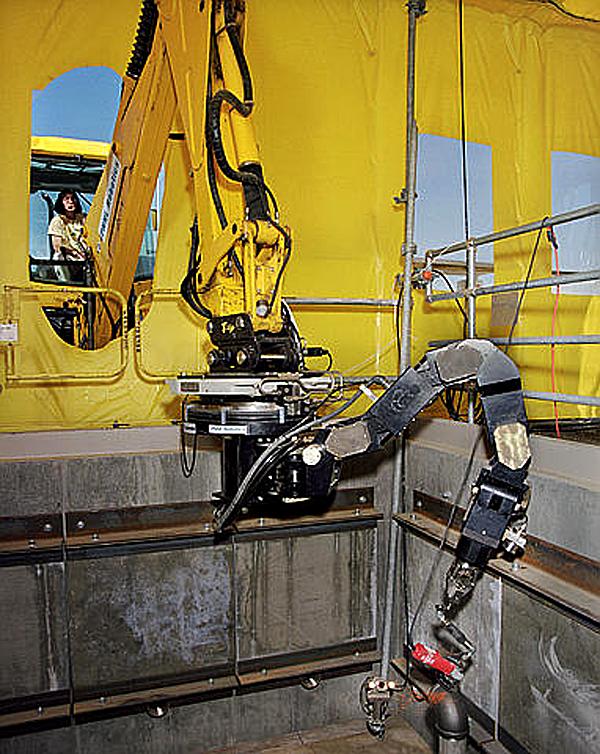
PACIFIC NORTHWEST NATIONAL LABORATORY'S PIT VIPER ROBOTIC ARM SYSTEM MOUNTED ON THE END OF A BACKHOE.

PACIFIC NORTHWEST NATIONAL LABORATORY'S 'PIT VIPER' ROBOTIC ARM SYSTEM, TESTED AT HAMMER'S WASTE TANK PROP, WILL ALLOW WORKERS TO REHABILITATE CONTAMINATED WASTE TANK PITS FROM THE SAFETY OF A NEARBY CONTROL TRAILER. THE HAZARDOUS MATERIALS MANAGEMENT AND EMERGENCY RESPONSE CENTER (HAMMER), IS A TRAINING FACILITY LOCATED IN RICHLAND, WASHINGTON. HAMMER AREAS OF EXPERTISE INCLUDE EMERGENCY OPERATIONS, ENVIRONMENTAL AND WASTE MANAGEMENT AND RECOVERY, FIRE OPERATIONS, LAW ENFORCEMENT, NUCLEAR SAFETY, OCCUPATIONAL SAFETY AND HEALTH AND TRANSPORTATION.